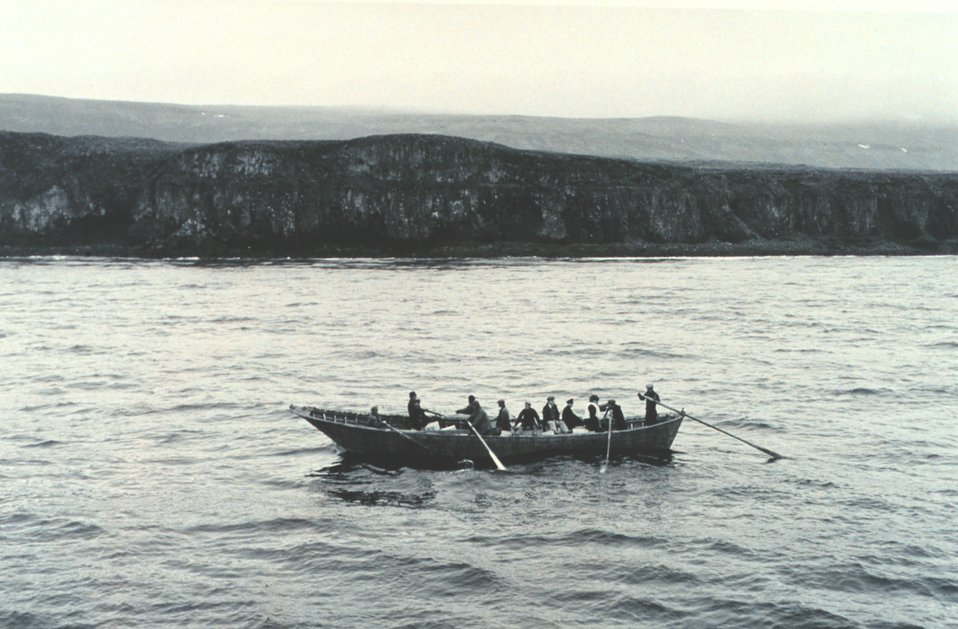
A bidarrah or large skin boat off St. George Island. F&WS 10,030.